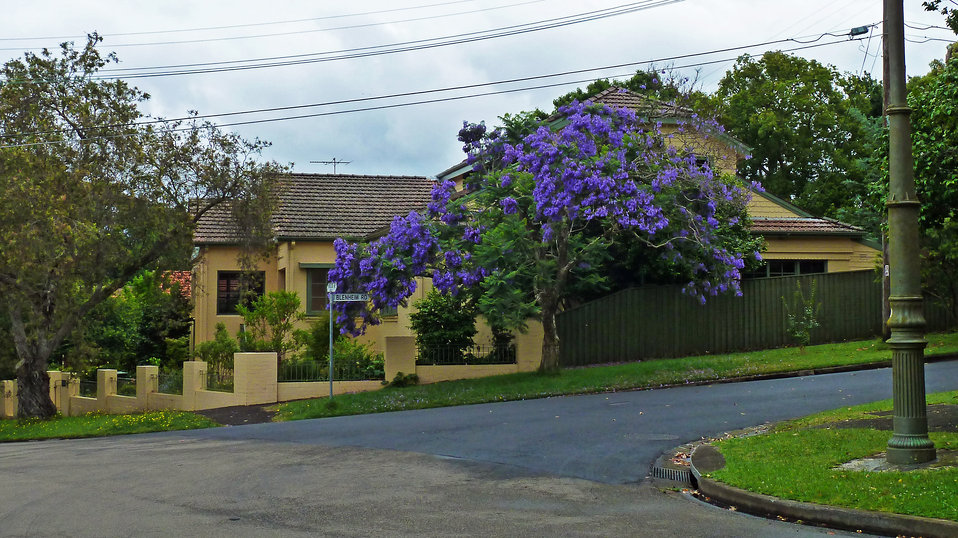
14 Woodside Avenue, Lindfield, New South Wales, Australia.